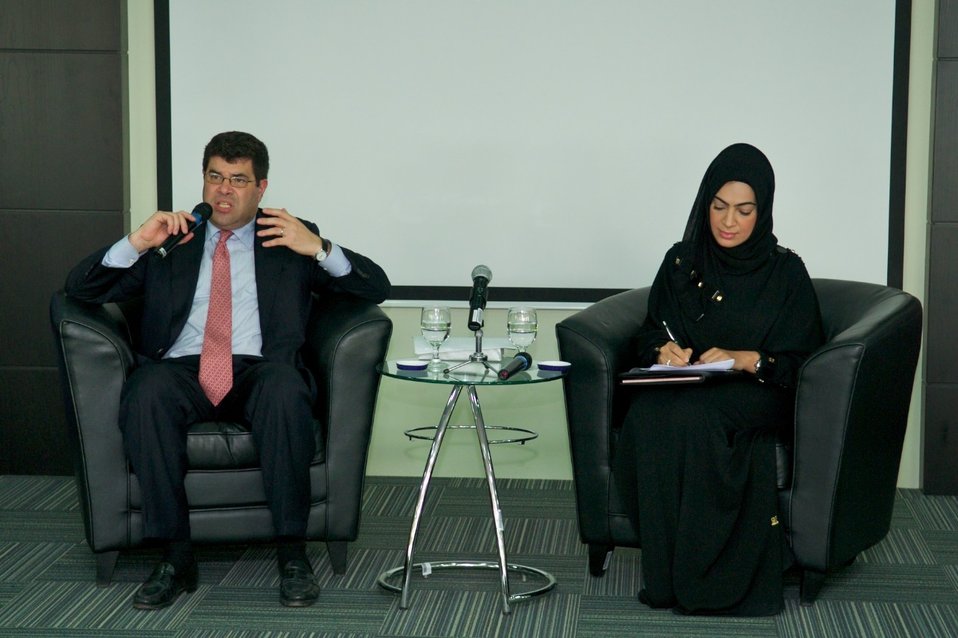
Dubai School of Government Discussion

In collaboration with the Dubai School of Government, Deputy Secretary Wolin hosted a discussion with Lubna Qassim for students, research fellows, young alumni, entrepreneurs, and members of Young Arab Leaders on February 16, 2010.